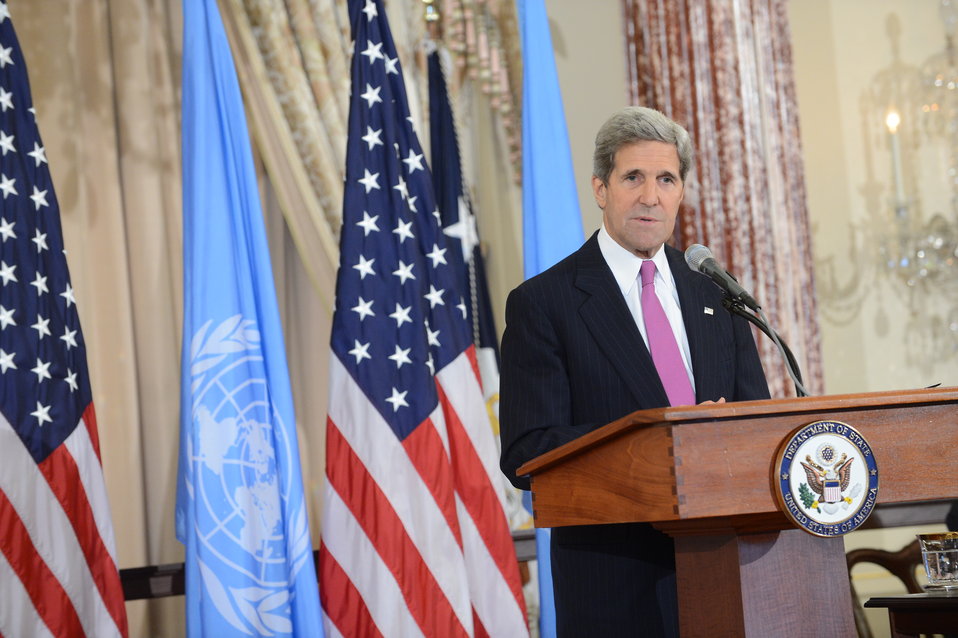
Secretary Kerry Delivers Remarks in Recognition of World Refugee Day

U.S. Secretary of State John Kerry delivers remarks in recognition of World Refugee Day at the U.S. Department of State in Washington, D.C., on June 20, 2013.